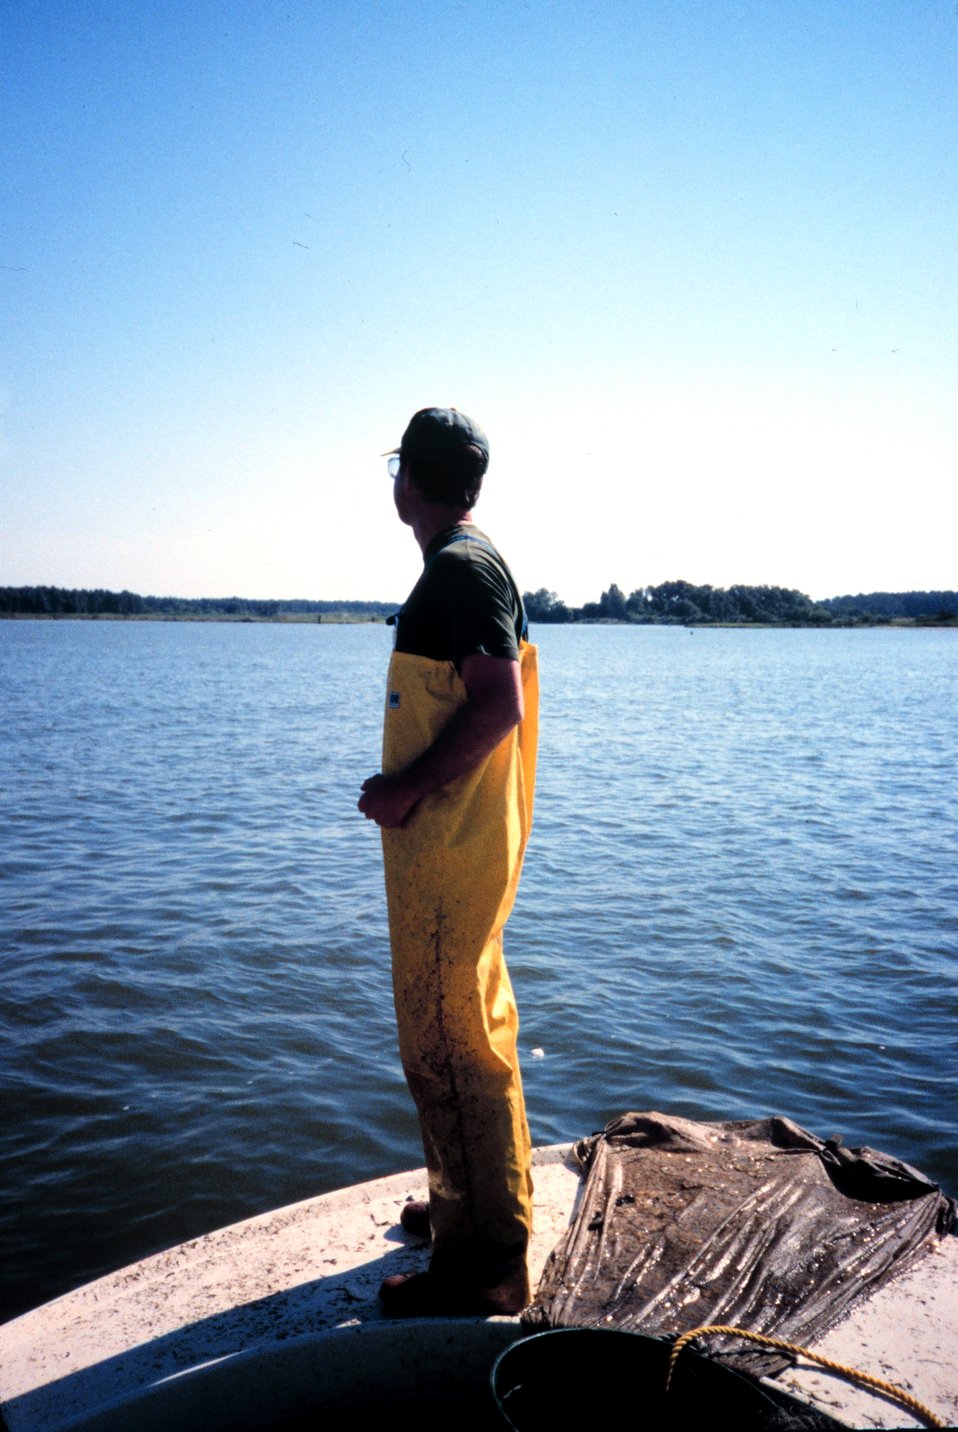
Dave Meyers of the NOAA Beaufort Lab surveys the sampling area.